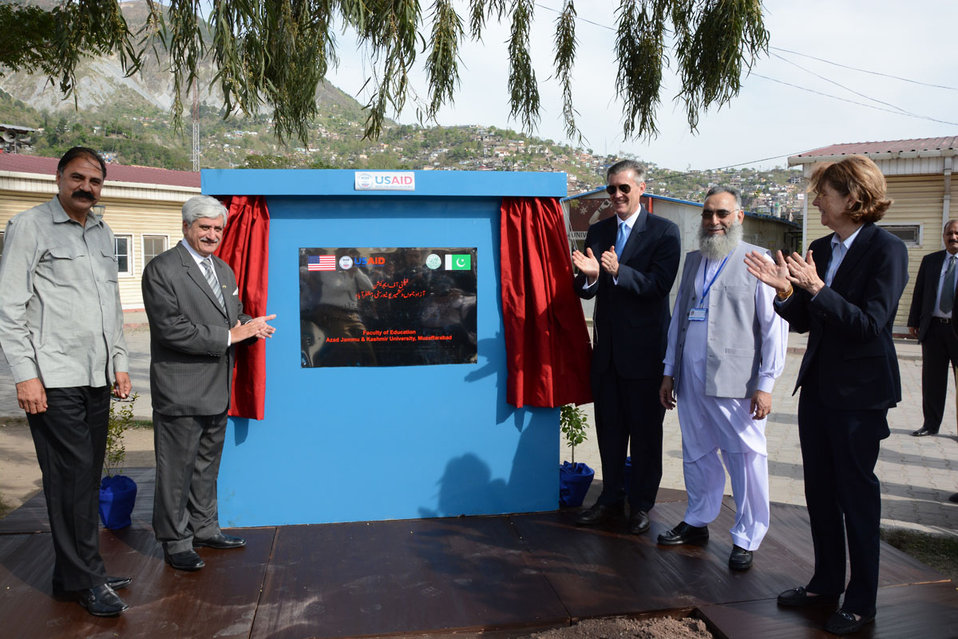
The United States Ambassador to Pakistan, Richard Olson broke ground for a U.S. funded construction of a new Faculty of Education building in Muzaffarabad, AJK. 33